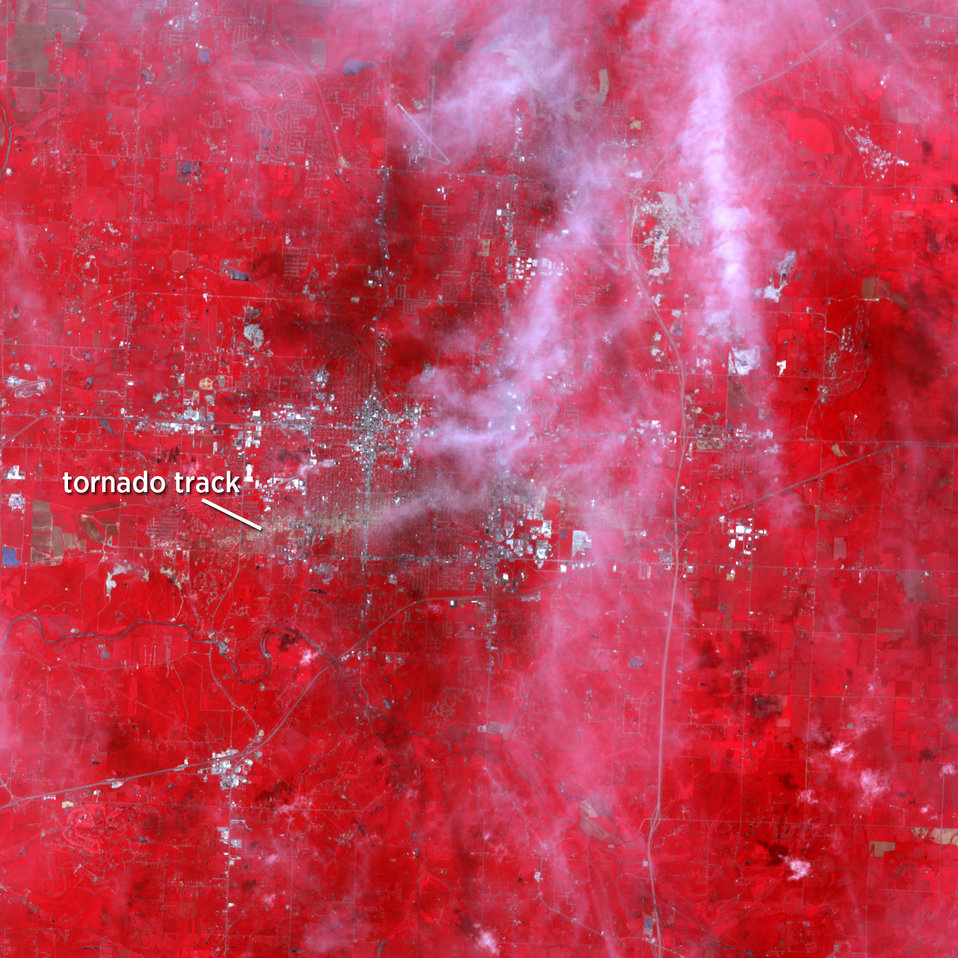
Satellite image of Joplin tornado

False-color satellite image showing the 22-mile track of the tornado that struck Joplin, Mo., on May 22, 2011.

See also www.nist.gov/el/disasterstudies/joplin-101311.cfm

Credit: NASA's Terra satellite